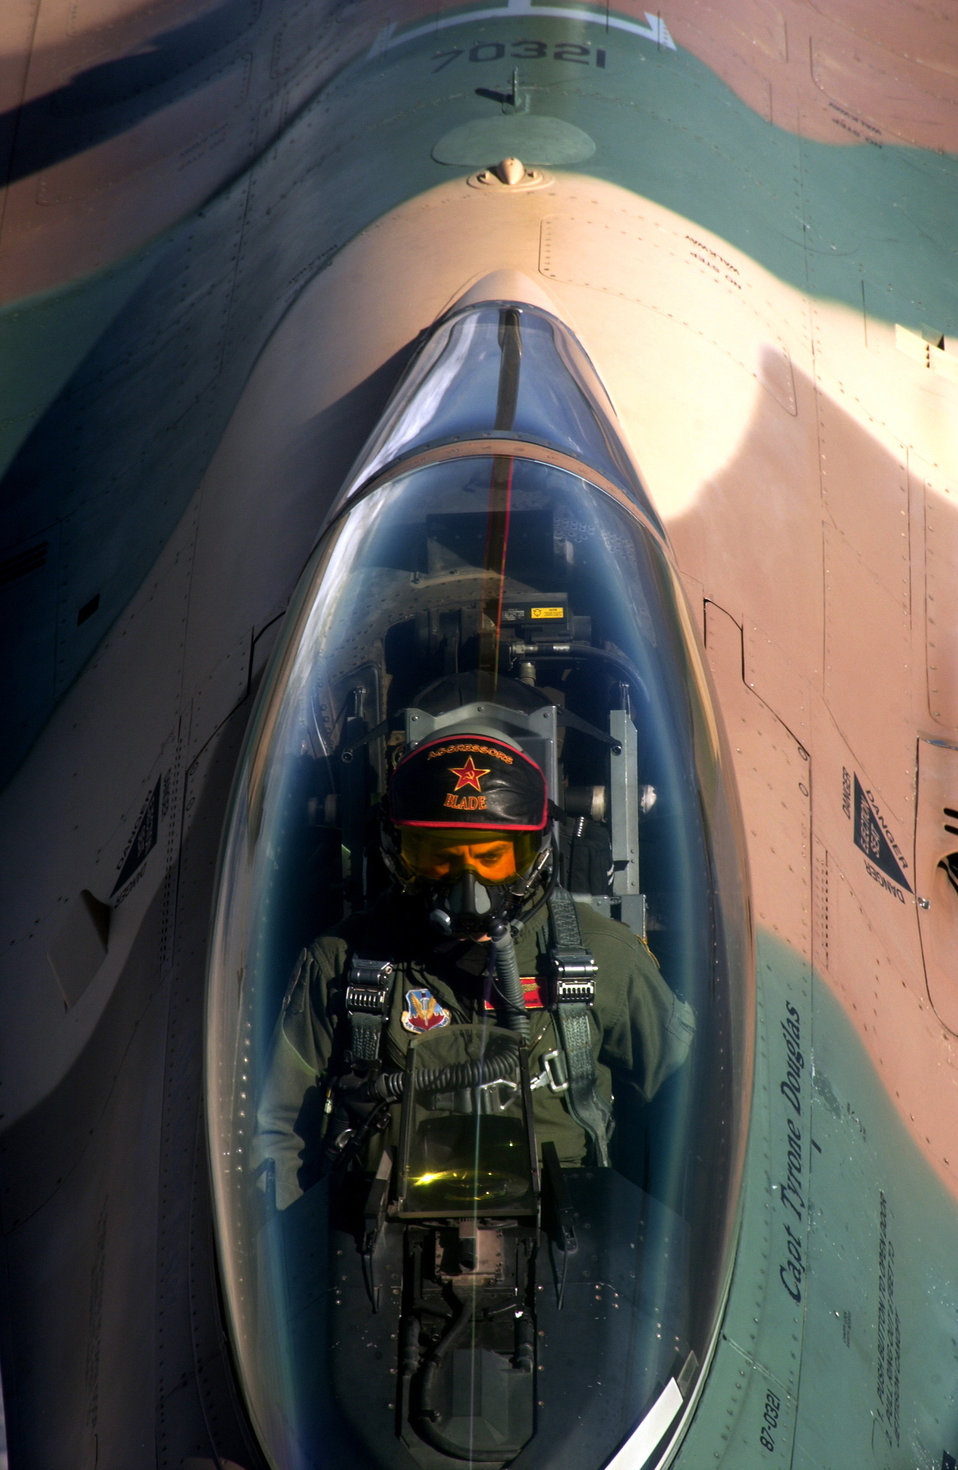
Airmen hone skills at Red Flag

An F-16 Fighting Falcon from the 64th Aggressor Squadron at Nellis Air Force Base, Nev., approaches the boom on a KC-135 Stratotanker to refuel Oct. 19 during Red Flag 07-1. Red Flag tests aircrew warfighting skills in realistic combat situations. The aircraft fly missions at the nearby Nevada Test and Training Range where they simulate an air war.